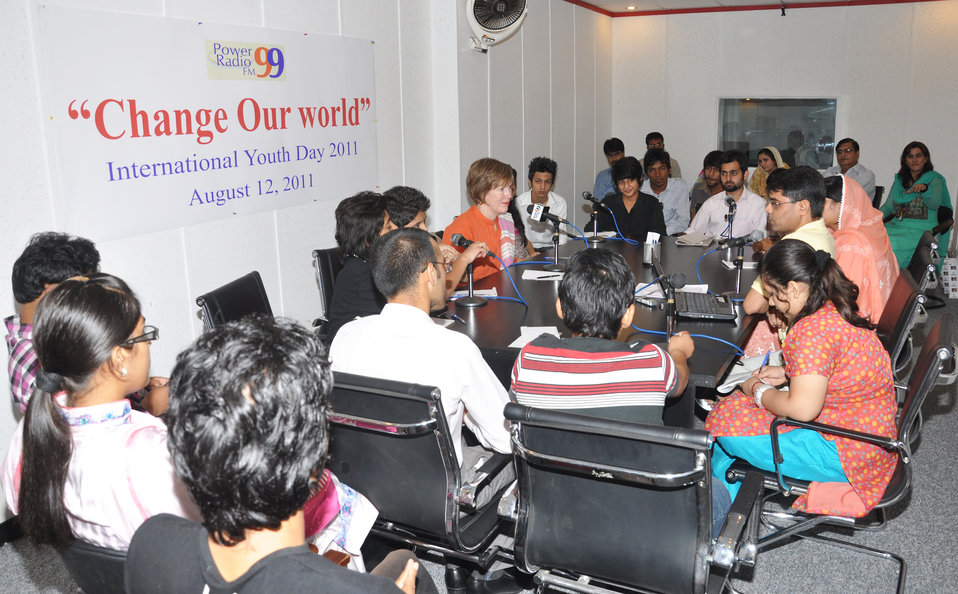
International Youth Day 2011

Islamabad, August 12, 2011 – Dr. Marilyn Wyatt, wife of U.S. Ambassador Cameron Munter, joined young people for a discussion that marked the international youth day at Power Radio FM 99.